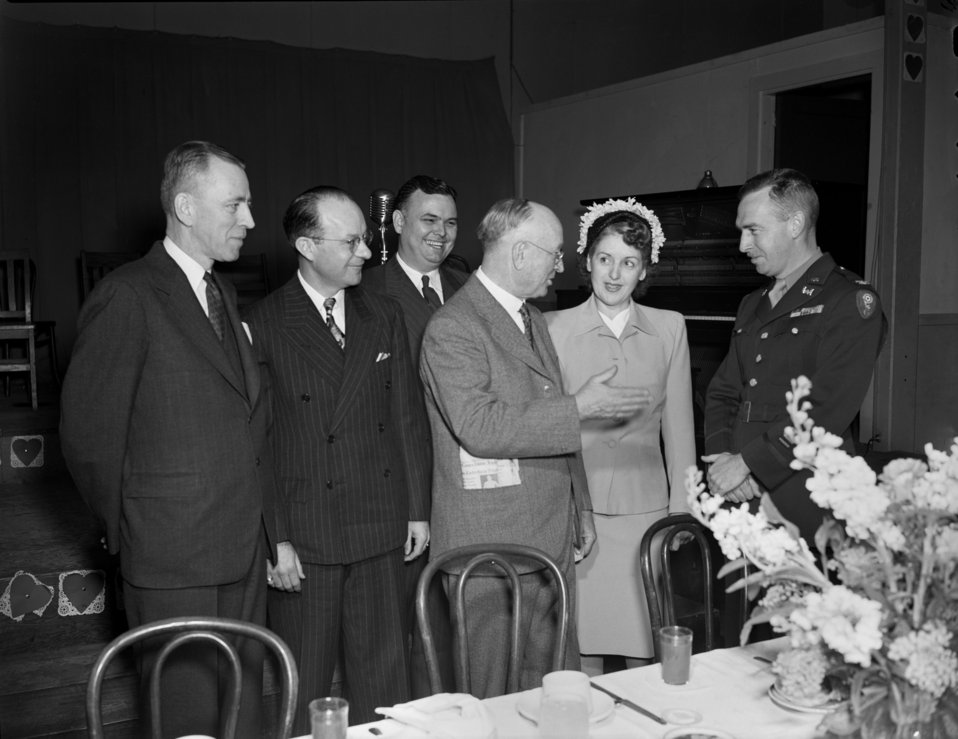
Republican meeting Oak Ridge 1947

3286-2a DOE photo Ed Westcott 1-15-1947 Oak Ridge Tennessee